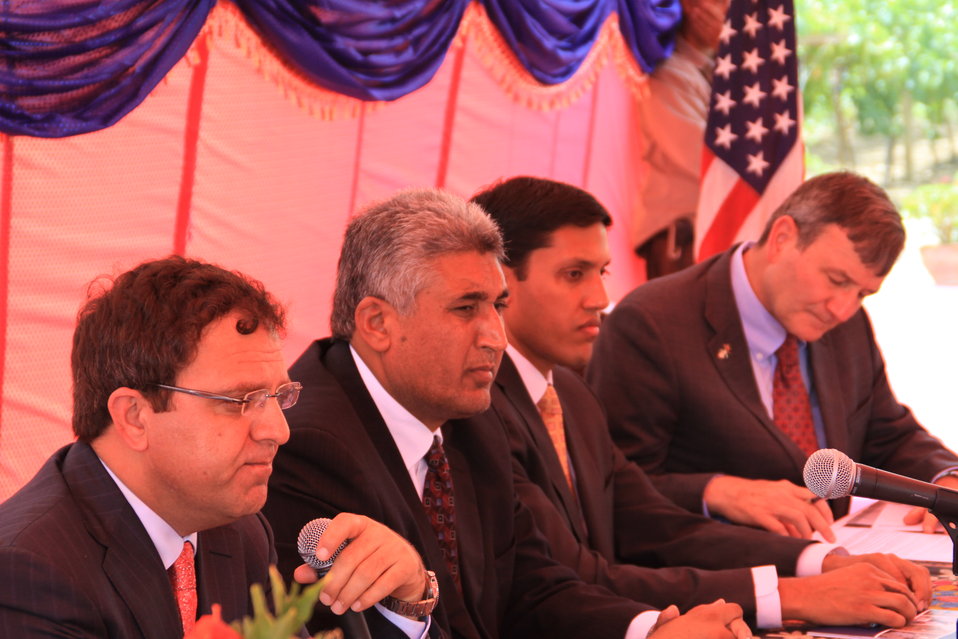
Badam Bagh Farm